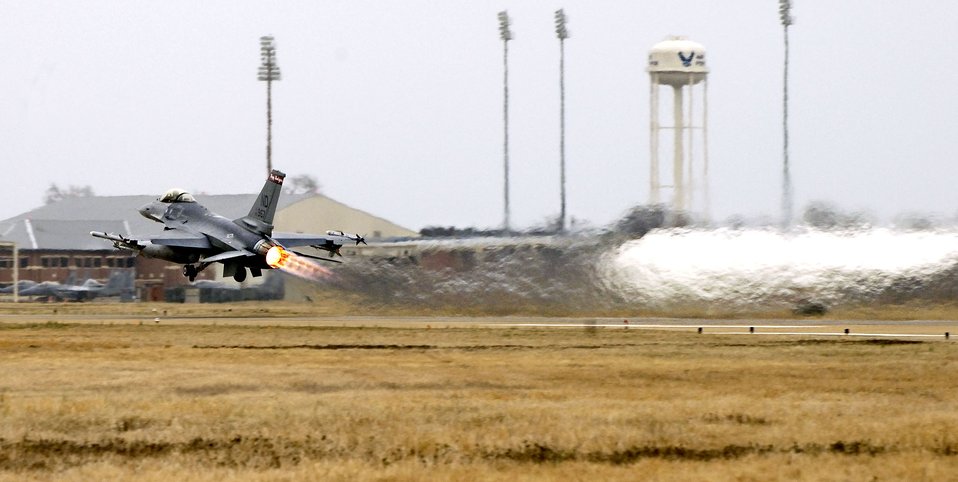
Safety milestone

An F-16 Fighting Falcon takes off during a practice scramble at Langley Air Force Base, Va., Monday, March 6, 2006. The 119th Fighter Wing marked 70,000 hours of accident-free flight.